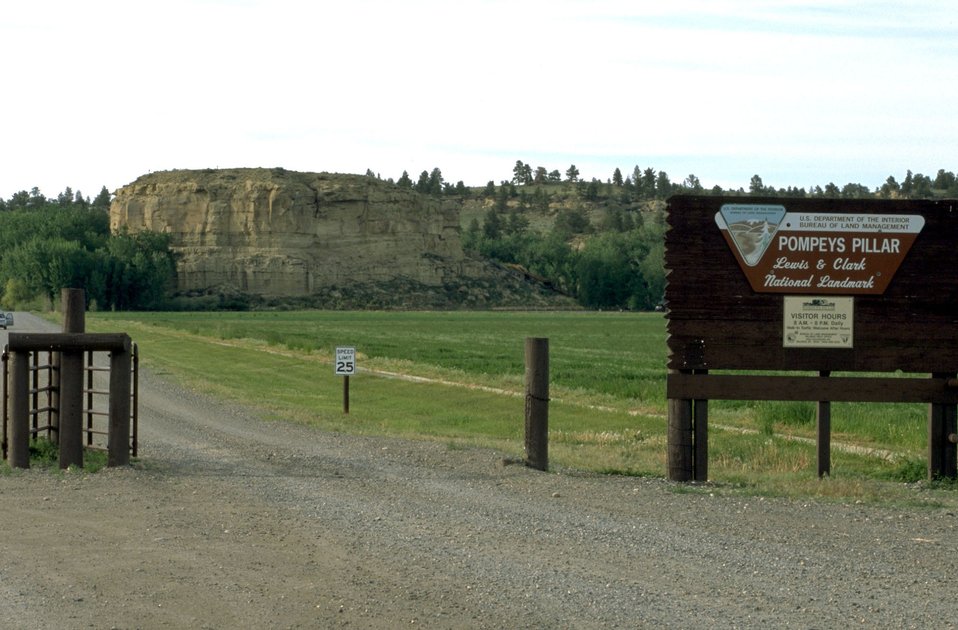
Entrance sign and access road to Pompeys Pillar National Monument